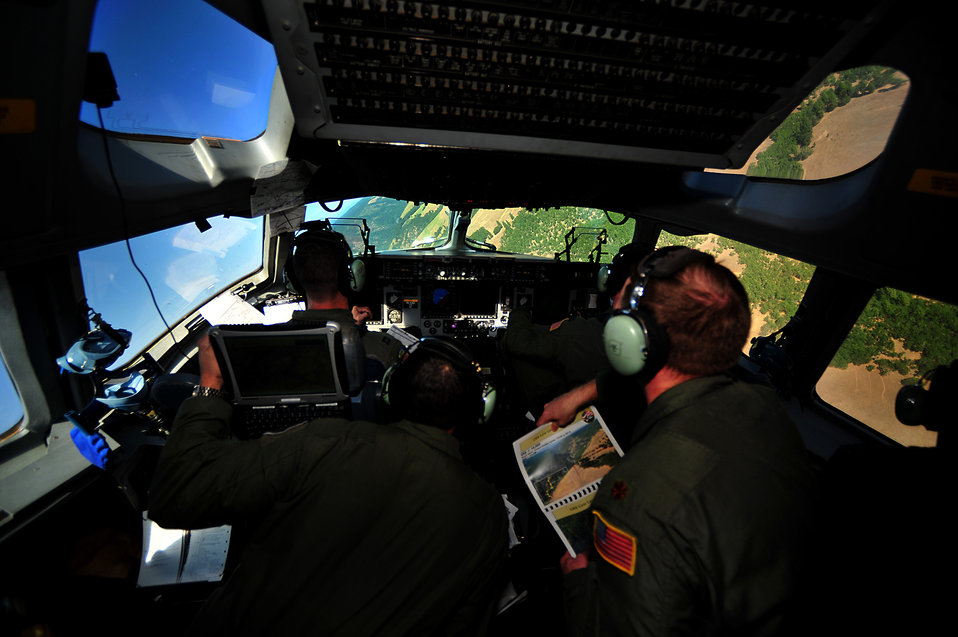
Just a little to the left

Airmen from Hickam Air Force Base, Hawaii, perform low-level maneuvers July 27, 2011, during an Air Mobility Rodeo 2011 event over Joint Base Lewis-McChord, Wash.